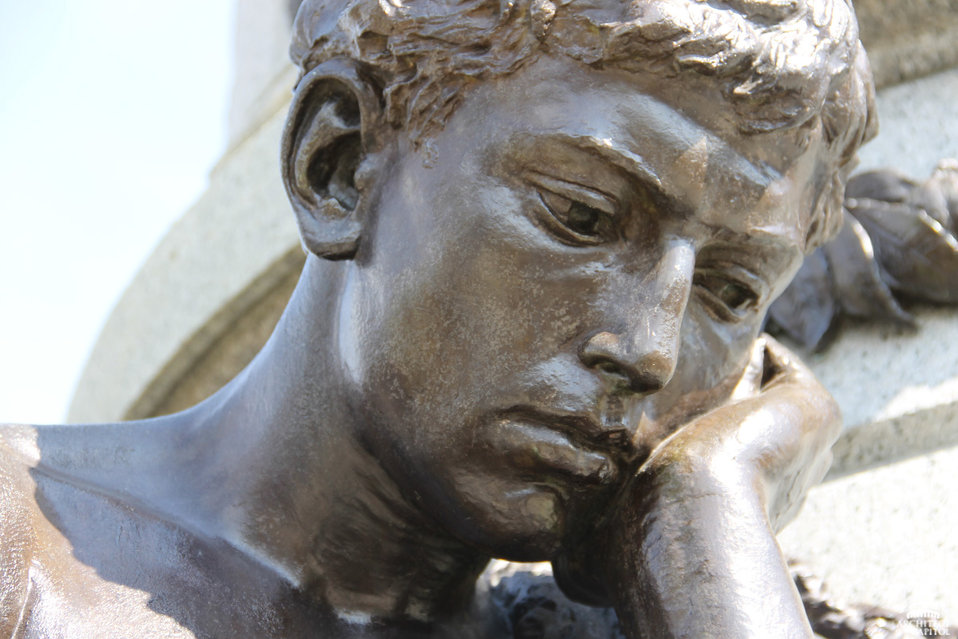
Student Figure on Garfield Monument